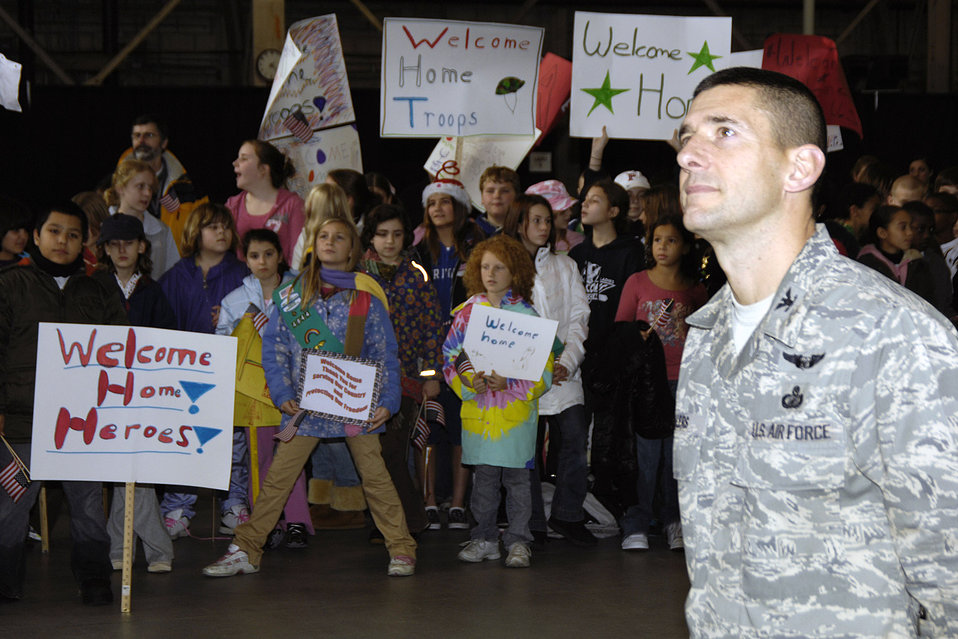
Hanscom heroes welcomed home

Col. Russell Fellers stands in formation while students from the Hanscom Middle School hold signs to welcome the colonel and more than 45 Airmen home from deployments during the Heroes' Homecoming celebration Dec. 12 at Hanscom Air Force Base, Mass.